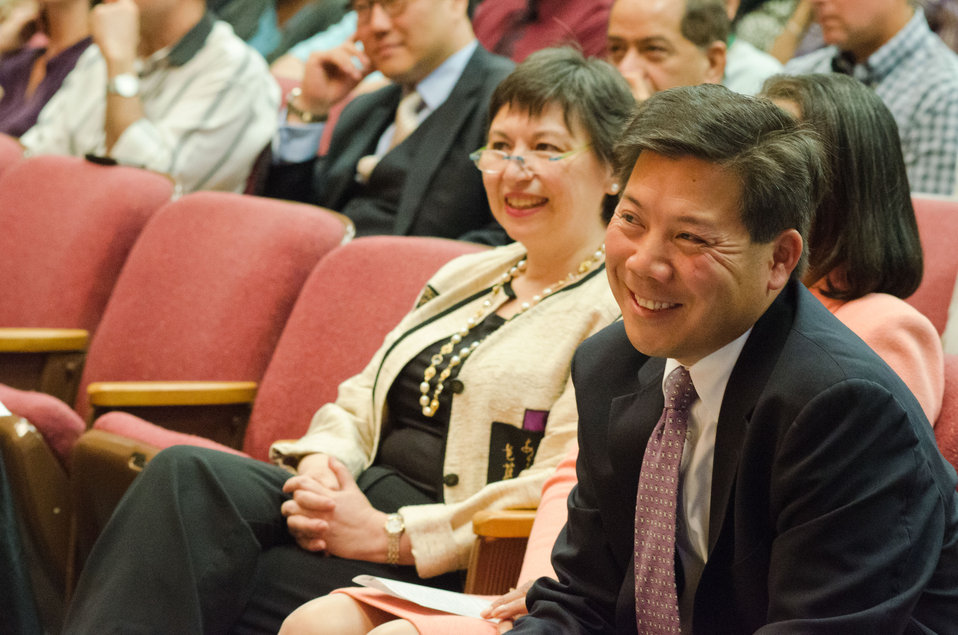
Agriculture Foreign Agricultural Service Associate Administrator Janet Nuzum and Assistant to the President and Cabinet Secretary The White House Chris Lu listen to speakers at the 2012 Asian Pacific American Heritage Observance “Striving for Excellence in Leadership, Diversity and Inclusion” at the U.S. Department of Agriculture in Washington, D.C. on Thursday, May 24, 2012.